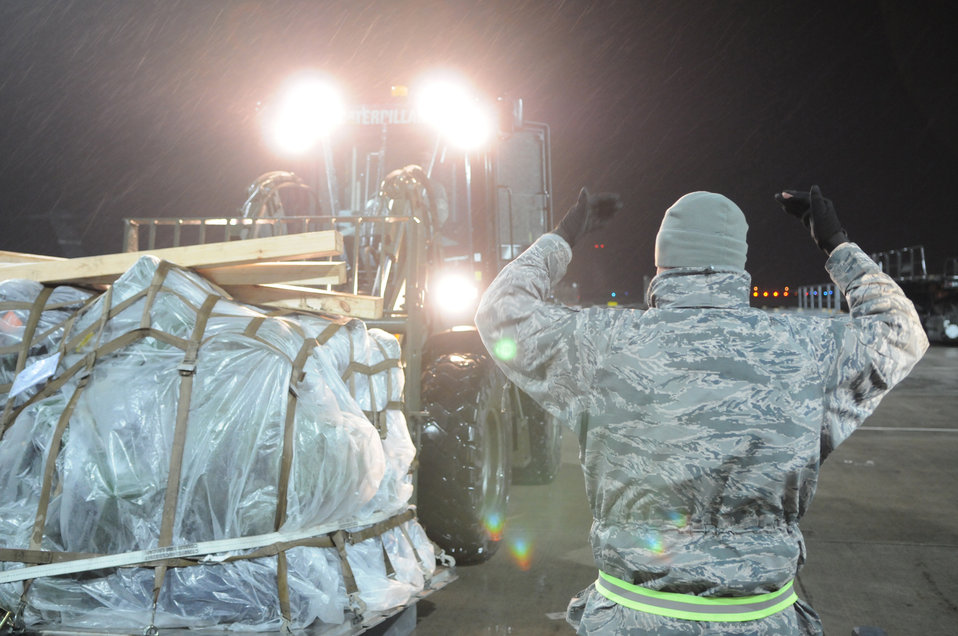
Operation Odyssey Dawn

SPANGDAHLEM AIR BASE, Germany ?An Airman assigned to the 52nd Logistics Readiness Squadron guides his fellow Airman while moving pallets onto a scale to be weighed here in preparation for shipment in support Operation Odyssey Dawn March 19. Joint Task Force Odyssey Dawn is the U.S. Africa Command task force established to provide operational and tactical command and control of U.S. military forces supporting the international response to the unrest in Libya and enforcement of United Nations Security Council Resolution (UNSCR) 1973. UNSCR 1973 authorizes all necessary measures to protect civilians in Libya under threat of attack by Qadhafi regime forces. JTF Odyssey Dawn is commanded by U.S. Navy Admiral Samuel J. Locklear, III.